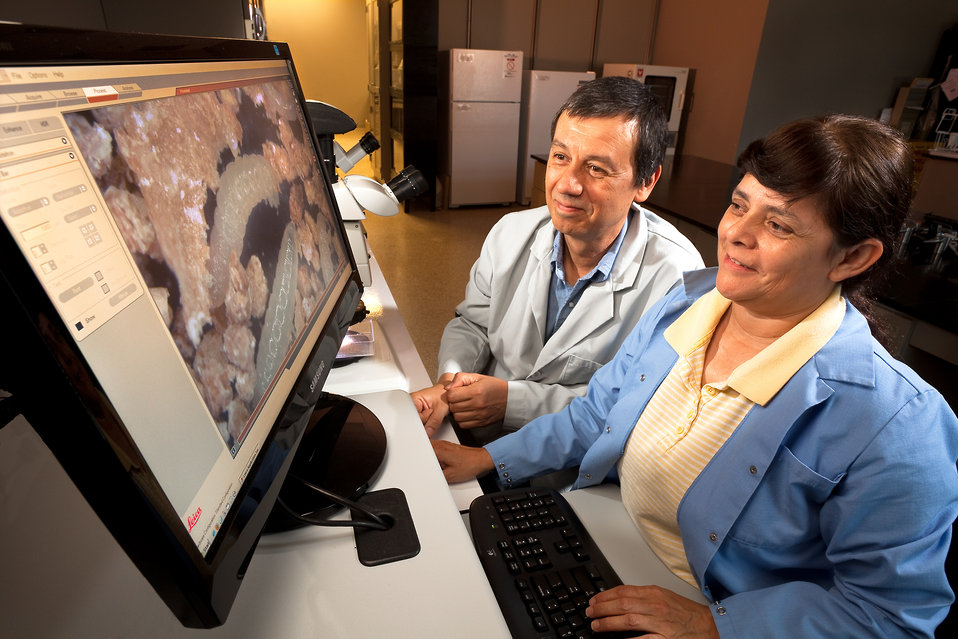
U.S. Department of Agriculture (USDA) Agriculture Research Service (ARS) entomologists Juan Morales-Ramos and Maria Guadalupe Rojas view first-instar larvae through a microscope and evaluate the fertility of the mealworms to determine the effectiveness of diet formulations size on July 19, 2011.